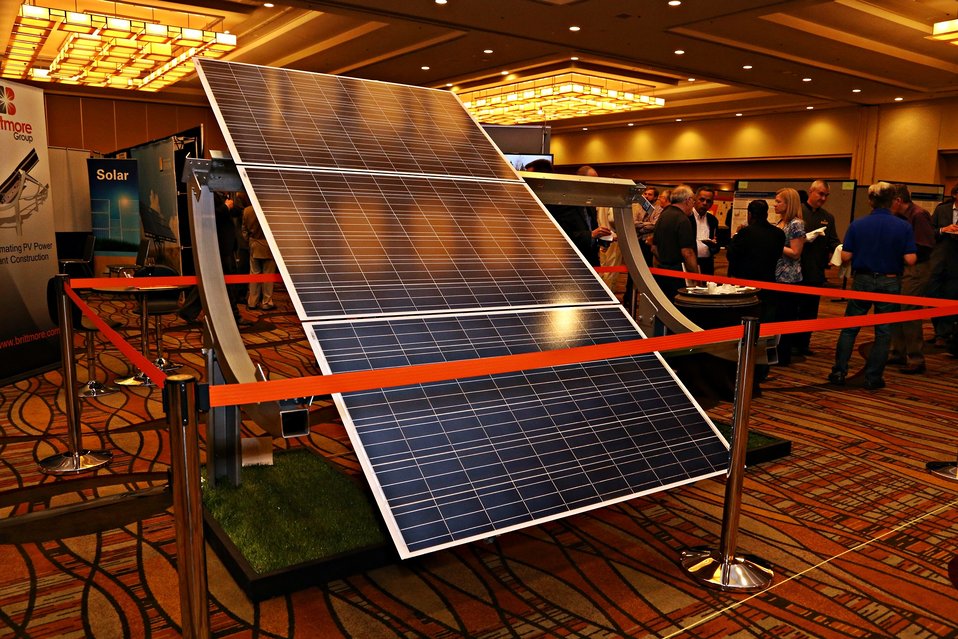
Tech Forum 10

Awardees like the Brittmore Group display their wares.